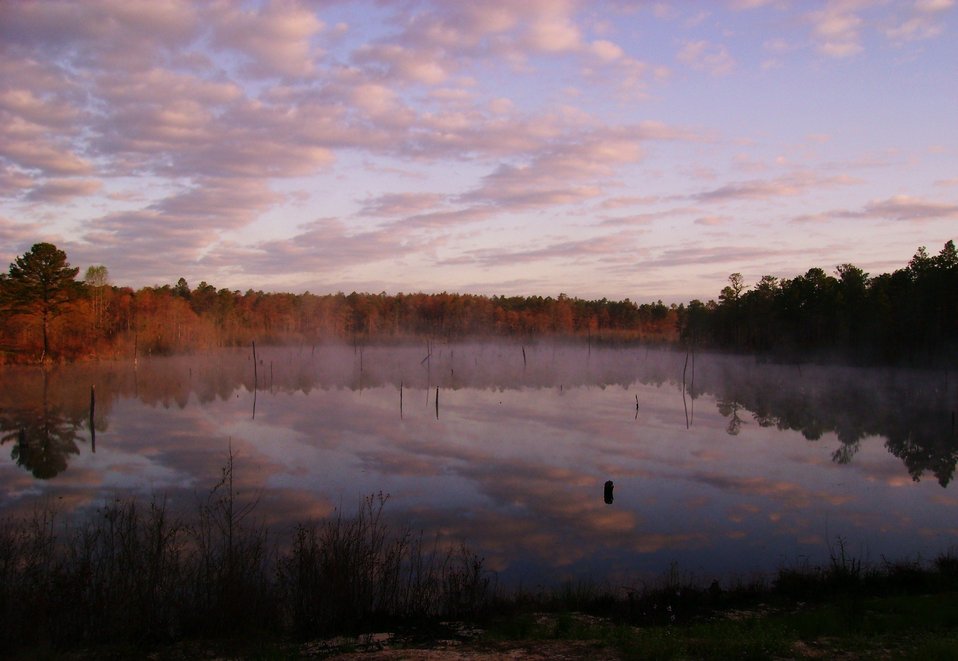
SC Wildlife Drive Pool D, Carolina Sandhills National Wildlife Refuge